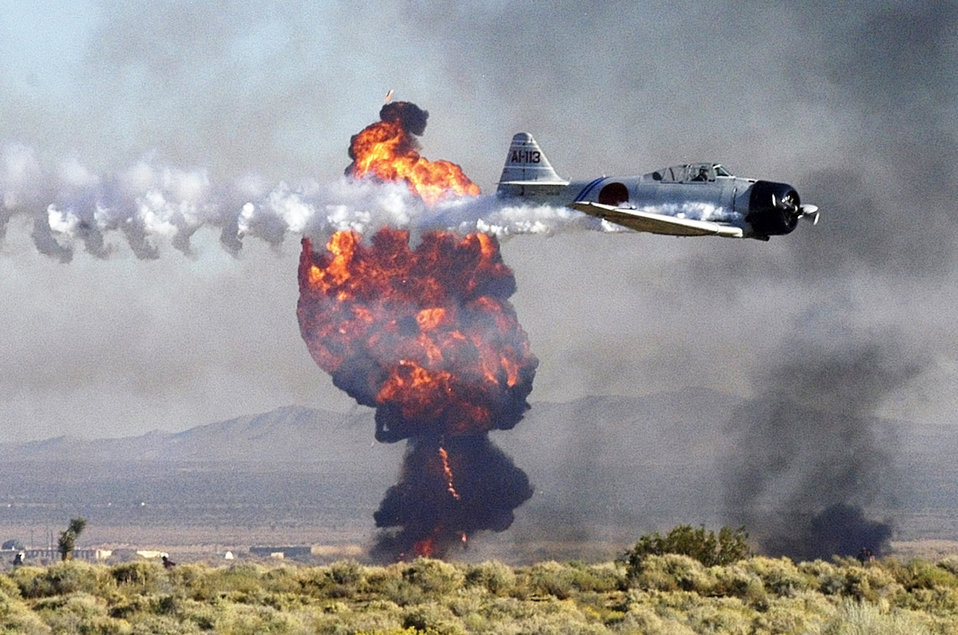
Edwards air show

EDWARDS AIR FORCE BASE, Calif. -- A replica World War II Japanese Zero fighter buzzes through clouds of smoke here during the 2005 Edwards Open House and Air Show. The aircraft took part in the Tora, Tora, Tora recreation of the Dec. 7, 1941 attack on Pearl Harbor at the Oct. 22 event. The recreation is part of a Commemorative Air Force demonstration that features more than 60 pyrotechnic effects.